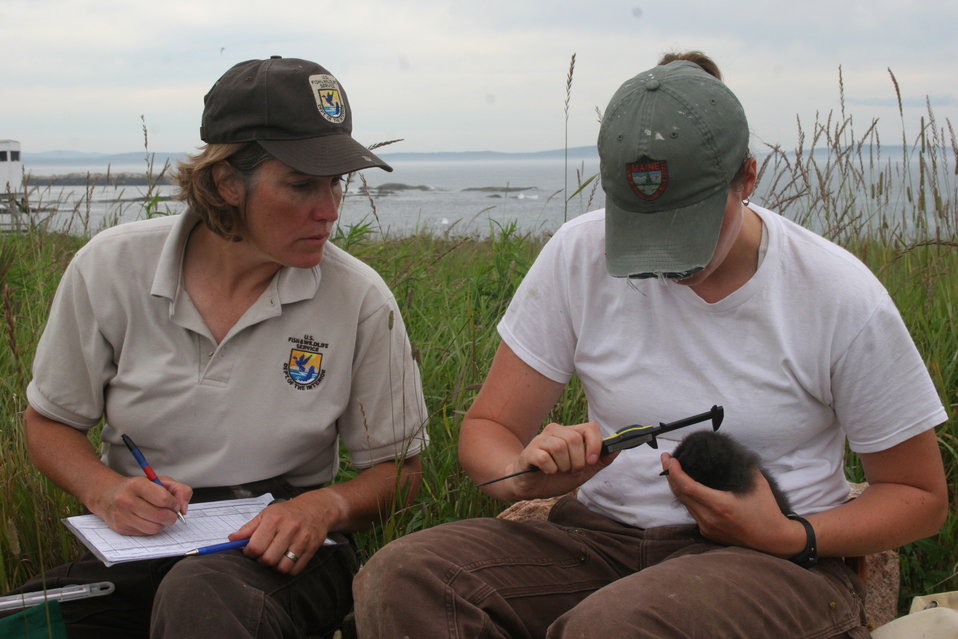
FWS Workers Measuring Razorbill